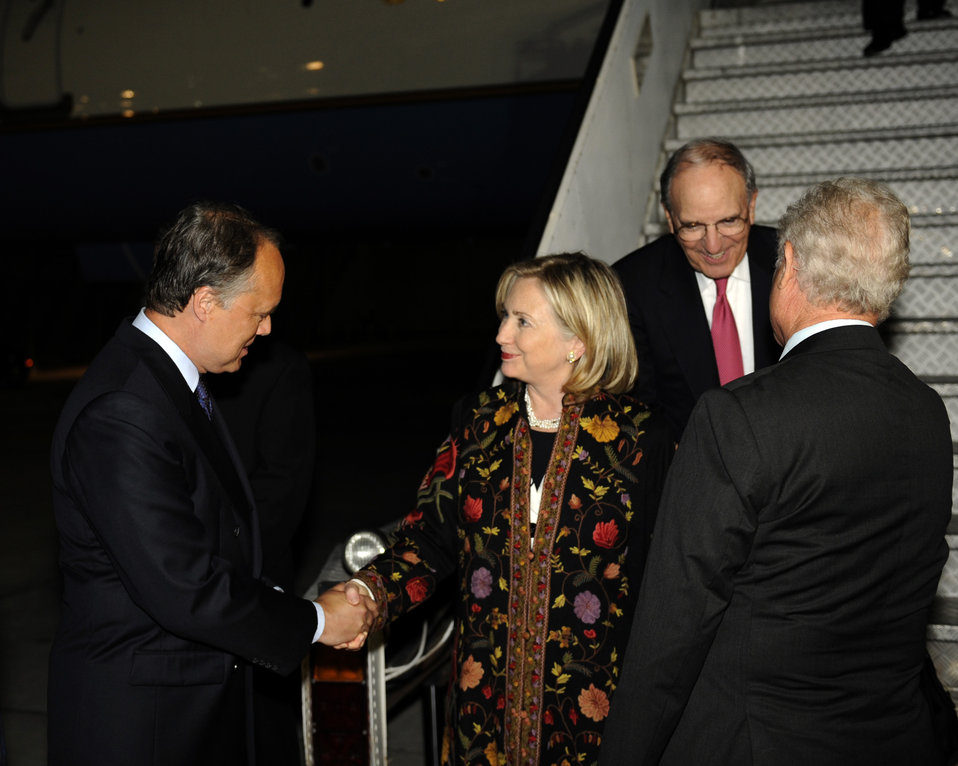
Secretary Clinton and Special Envoy Mitchell Are Welcomed to Israel By Israeli Ambassador Eldan and U.S. Ambassador Cunningham

U.S. Secretary of State Hillary Rodham Clinton (center) and Special Envoy for Middle East Peace George J. Mitchell (second from right) are welcomed upon arrival to Israel by Israeli Chief of Protocol Ambassador Yitzhak Eldan (left) and U.S. Ambassador to Israel James Cunningham (bottom right) in Tel Aviv on September 14, 2010.